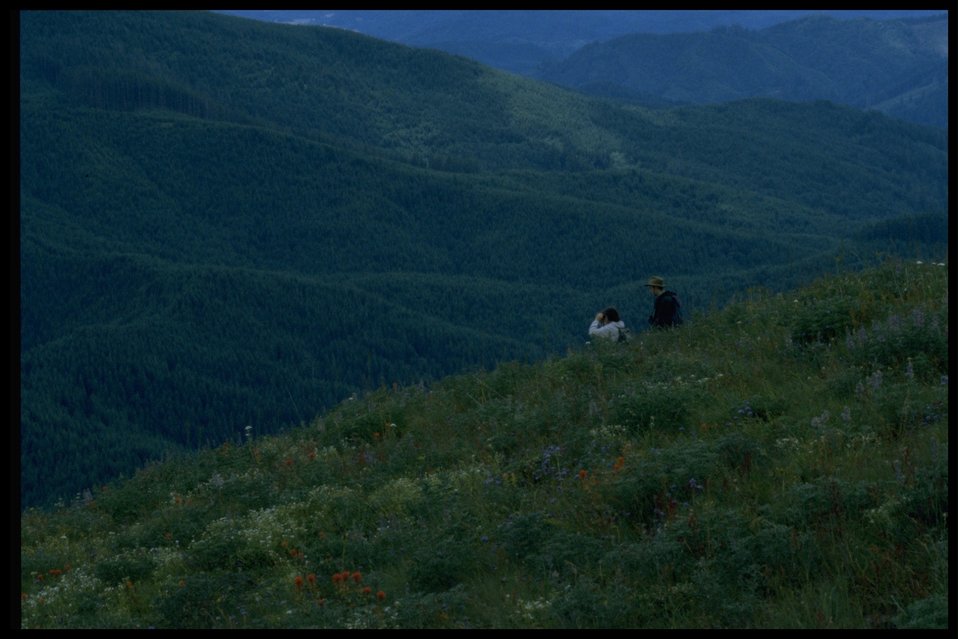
Meadow, wildflowers, scenic view from Mary's Peak.